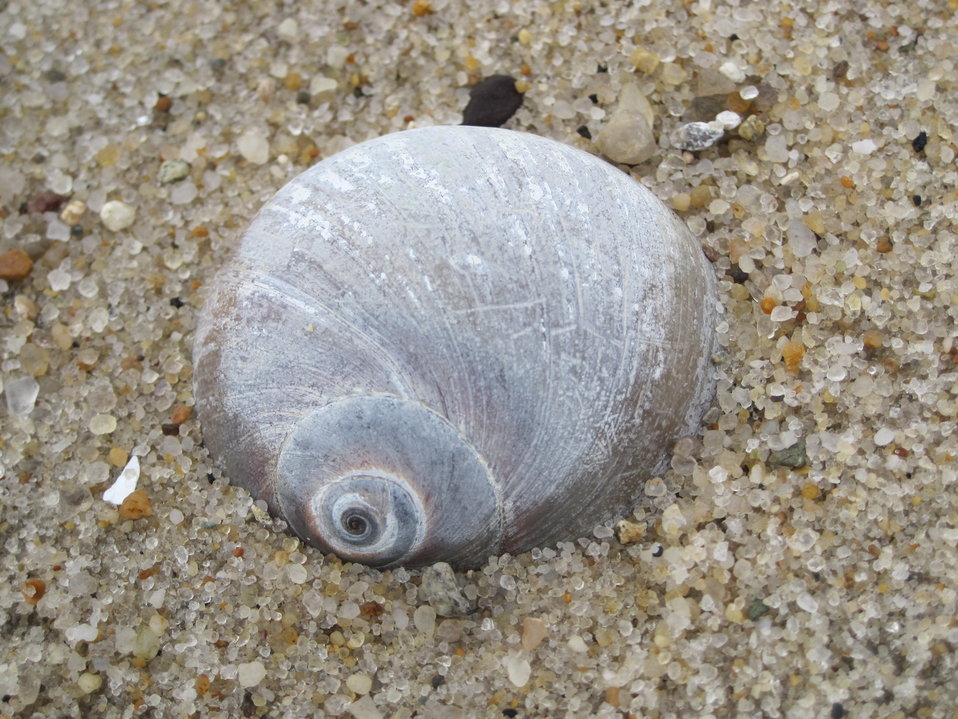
Shell on the beach at Monomoy

A stroll along the beach offers many chances to spot beautiful shells such as this.

Credit: Keith Shannon/USFWS

Monomoy National Wildlife Refuge is part of the Eastern Massachusetts National Wildlife Refuge Complex.